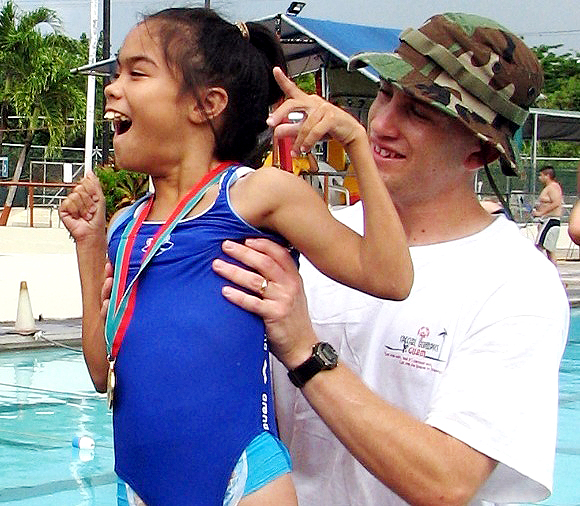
2006 Guam Special Olympics

Staff Sgt. Michael Cole assists gold-medal winner Desirae Tyquiengco during the 2006 Guam Special Olympics aquatic event on Saturday, June 3, 2006. Volunteers from the 393rd Expeditionary Bomb Squadron and 36th Expeditionary Aircraft Maintenance Squadron at Andersen Air Force Base, Guam, assisted during the events, acting as official timekeepers, distributing medals and helping in other areas. Sergeant Cole is assigned to the 393rd EBS.